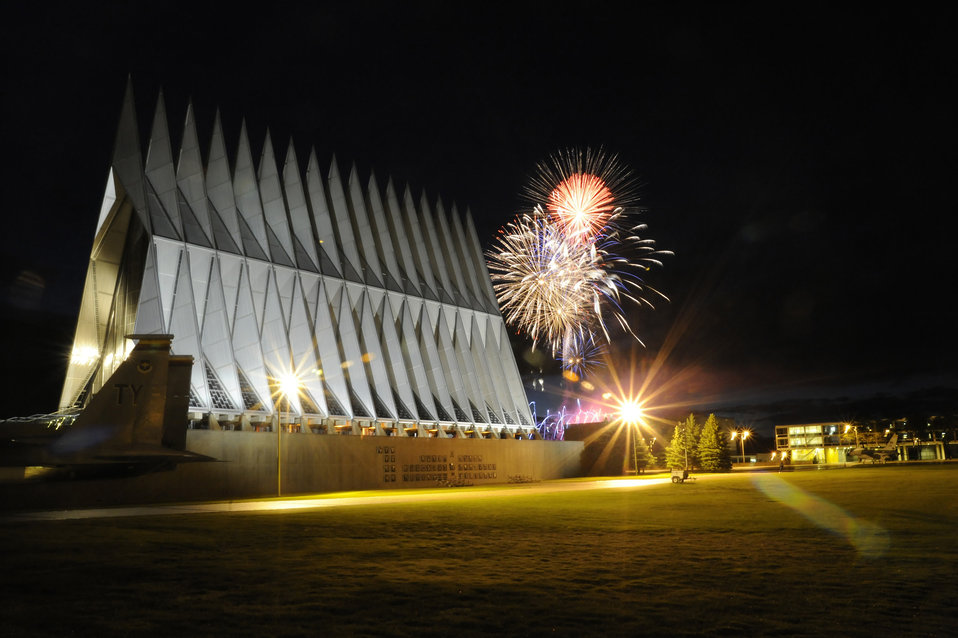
July 4th Air Force Academy

Fireworks explode over the Air Force Academy Cadet Chapel during the Fourth of July fireworks show at the Air Force Academy Jul 4.